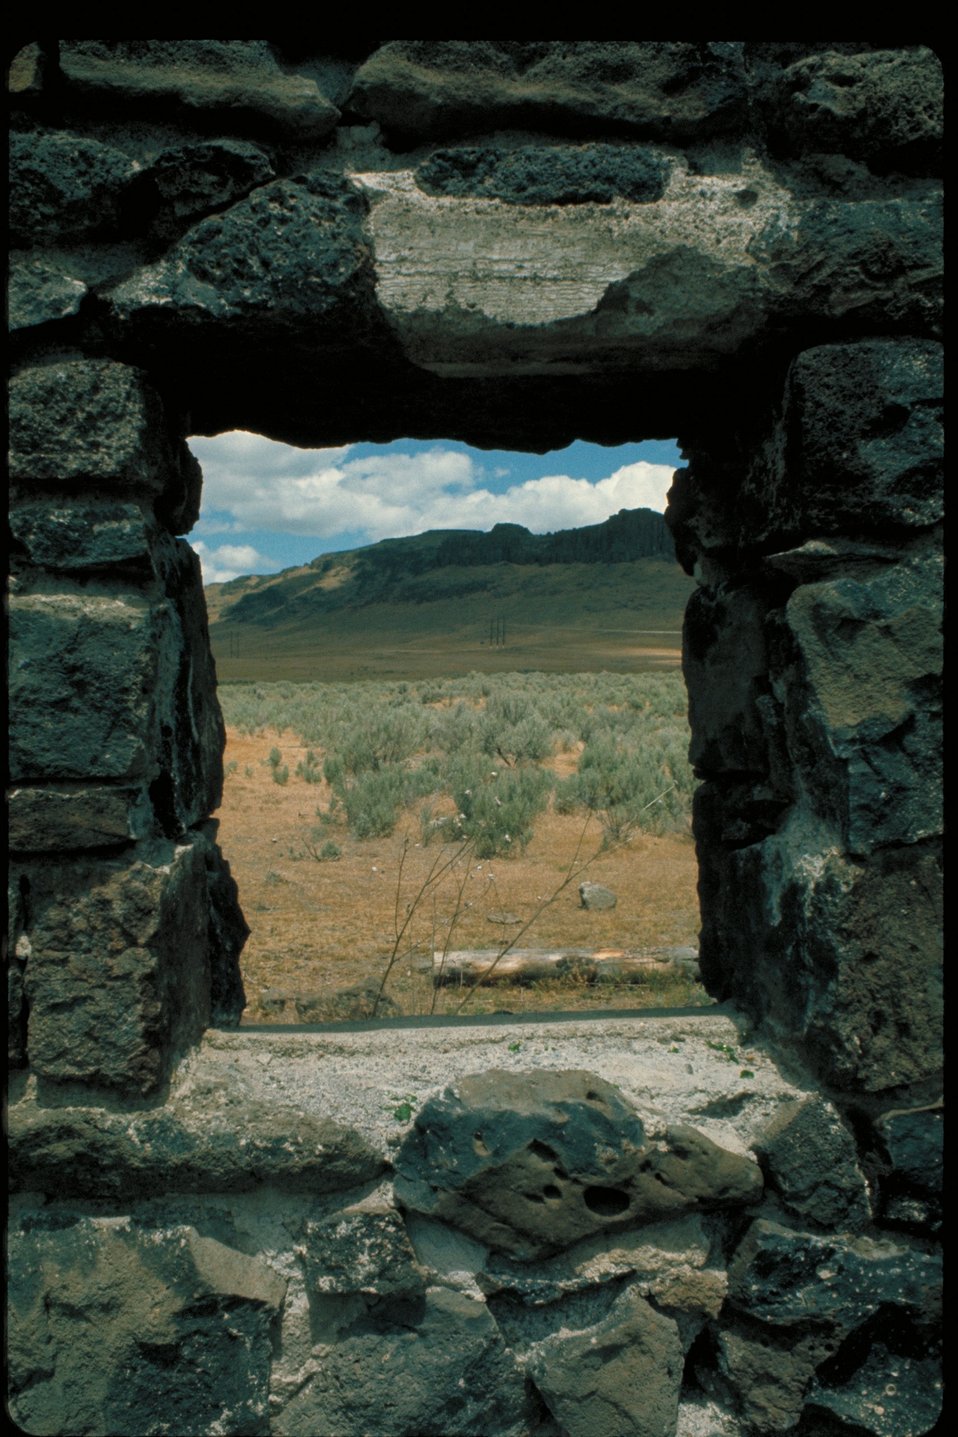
Hot Springs east of Mountain Home Oregon Trail Lower Snake River District